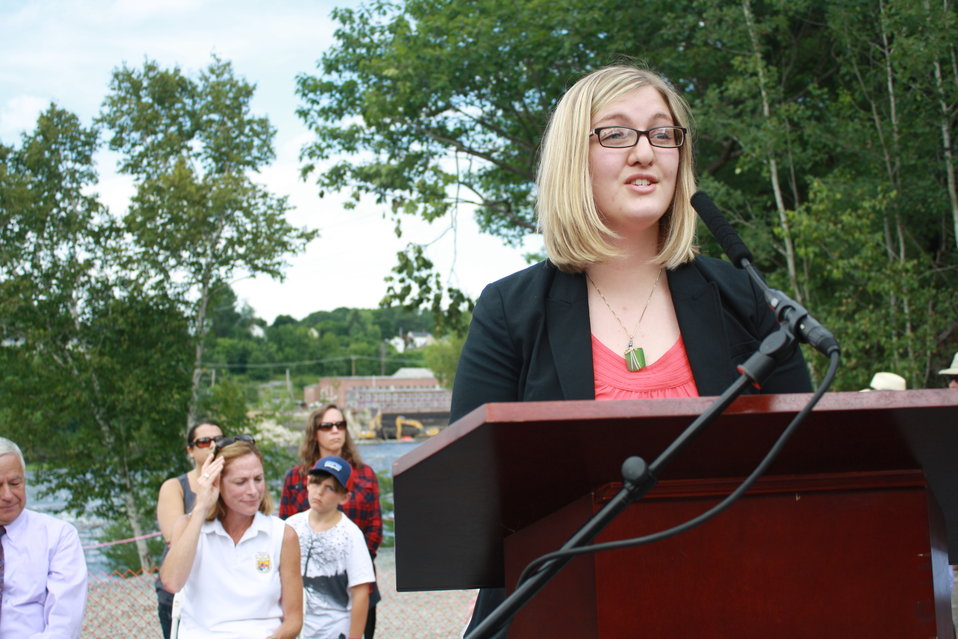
Veazie Dam Removal

Paige Eggleston from the office of Senator Susan Collins.